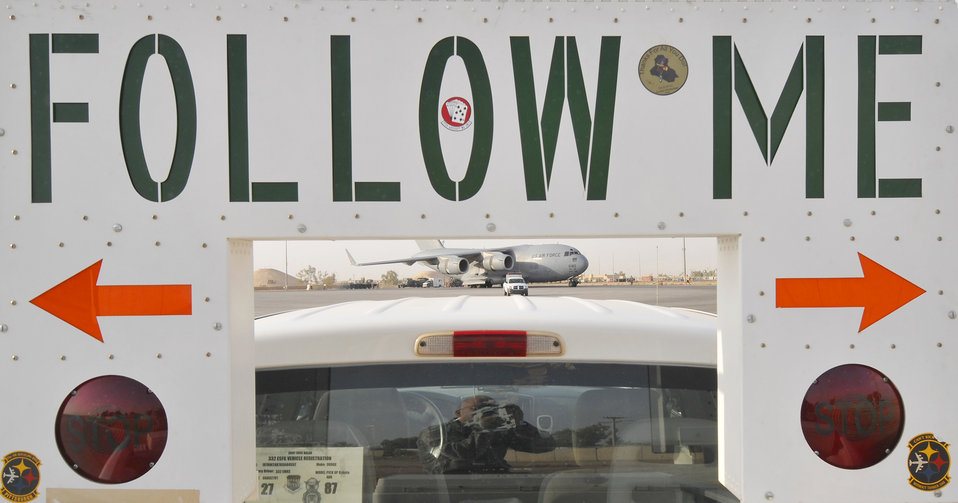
Crash recovery

The Airmen of the 332nd Expeditionary Maintenance Squadron's transient alert shop use specialized vehicles to escort large aircraft on the flightline July 3, 2010, at Joint Base Balad, Iraq. TA members assist approximately 500 military and civilian aircraft per month that carry approximately 20,000 passengers, 4,000 tons of cargo and four tons of mail.